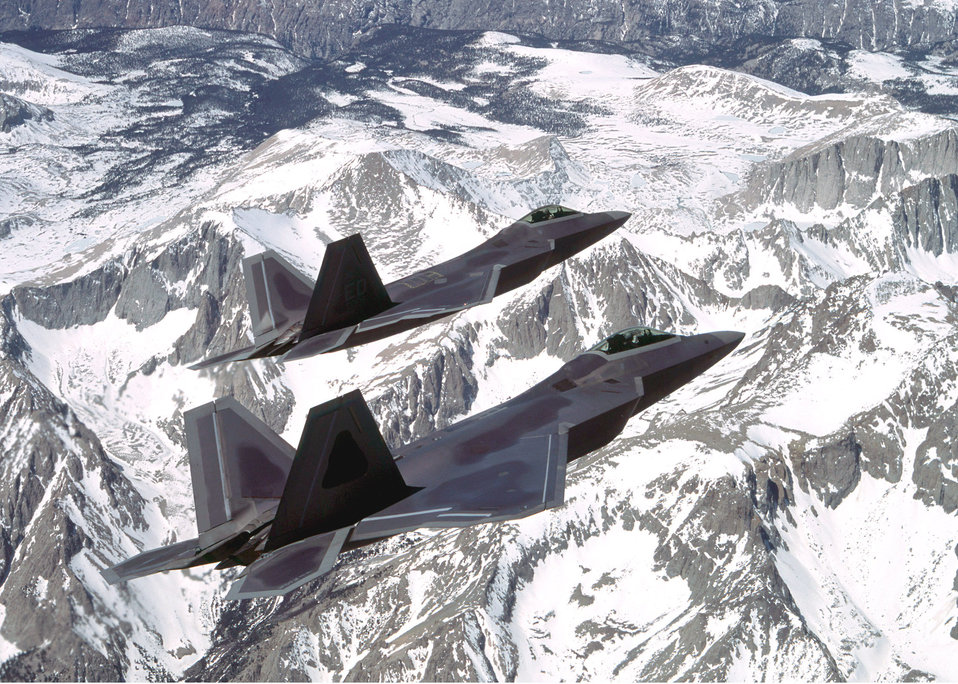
Dual raptors

EDWARDS AIR FORCE BASE, Calif. -- Two F/A-22 Raptors based here undergo developmental flight testing recently. The Air Force negotiated the procurement of one additional Raptor as part of a recent purchase, raising the total to 21 aircraft.